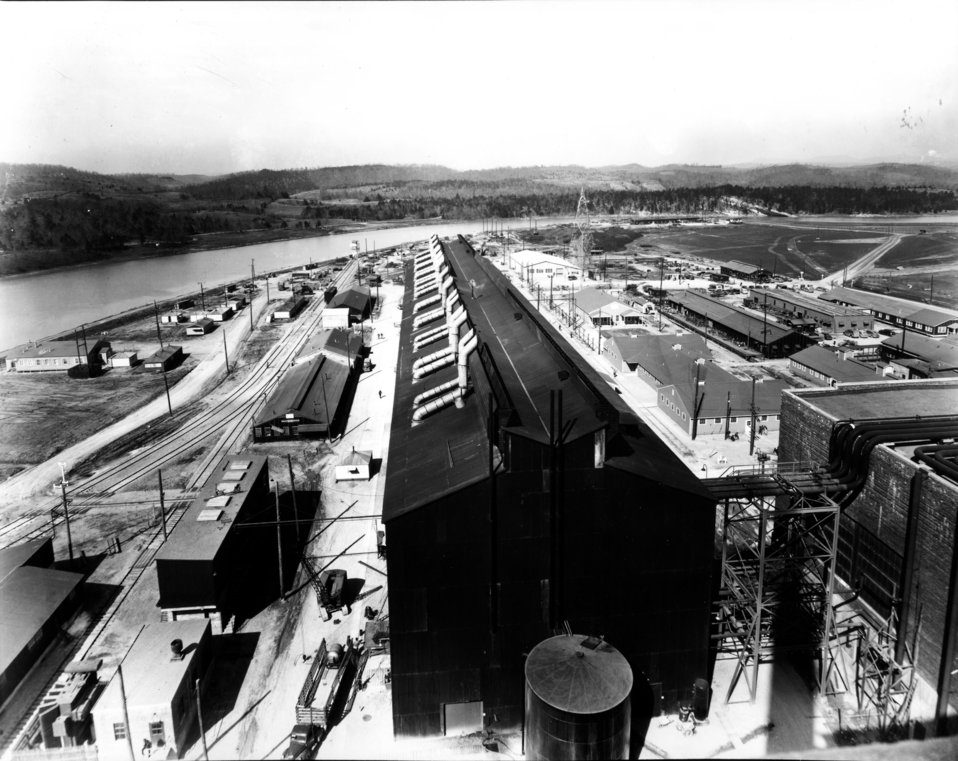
Schools at Oak Ridge